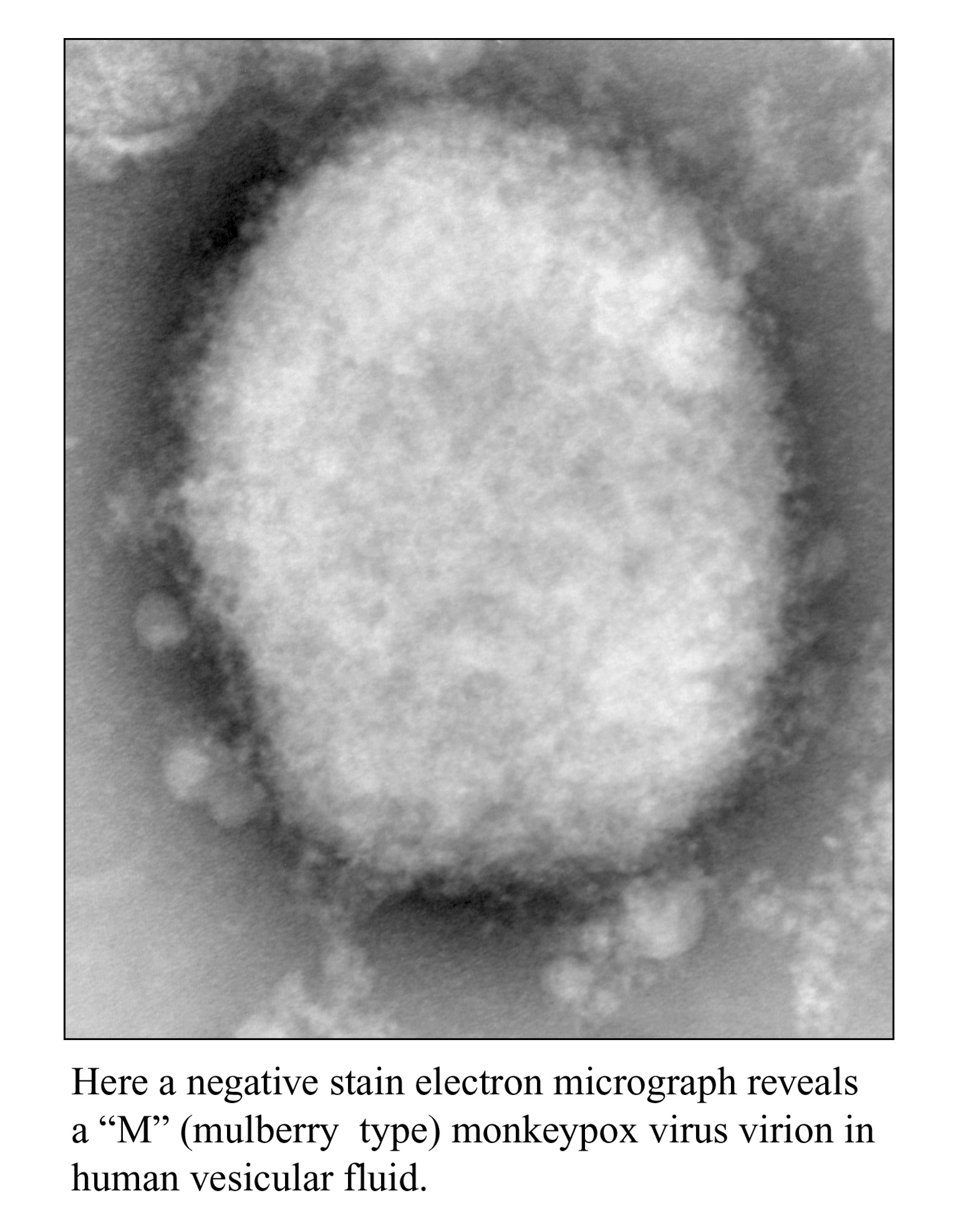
Here a negative stain electron micrograph reveals a 'M' (mulberry type) monkeypox virus virion in human vesicular fluid. See PHIL 10817 for a colorized version of this image.